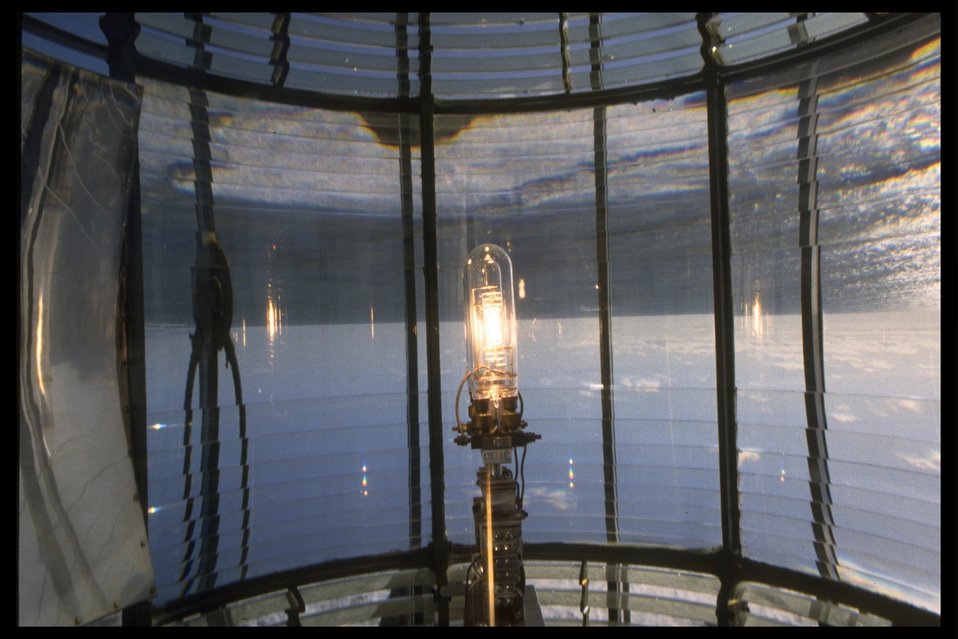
The lightbulb (1000 watt lens) on the interior of the Yaquina Head lighthouse.